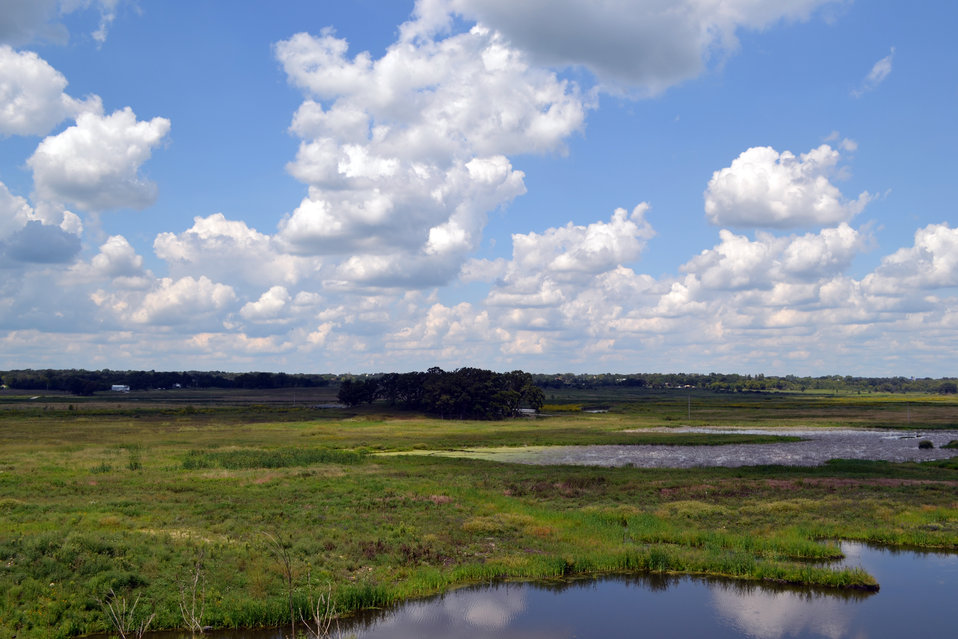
The Lost Kame Marsh

Glacial Park has long been considered one of the jewels of the county’s open space holdings, characterized by its rolling prairie, wetlands, delta kames, oak savanna and the tranquil presence of Nippersink Creek.